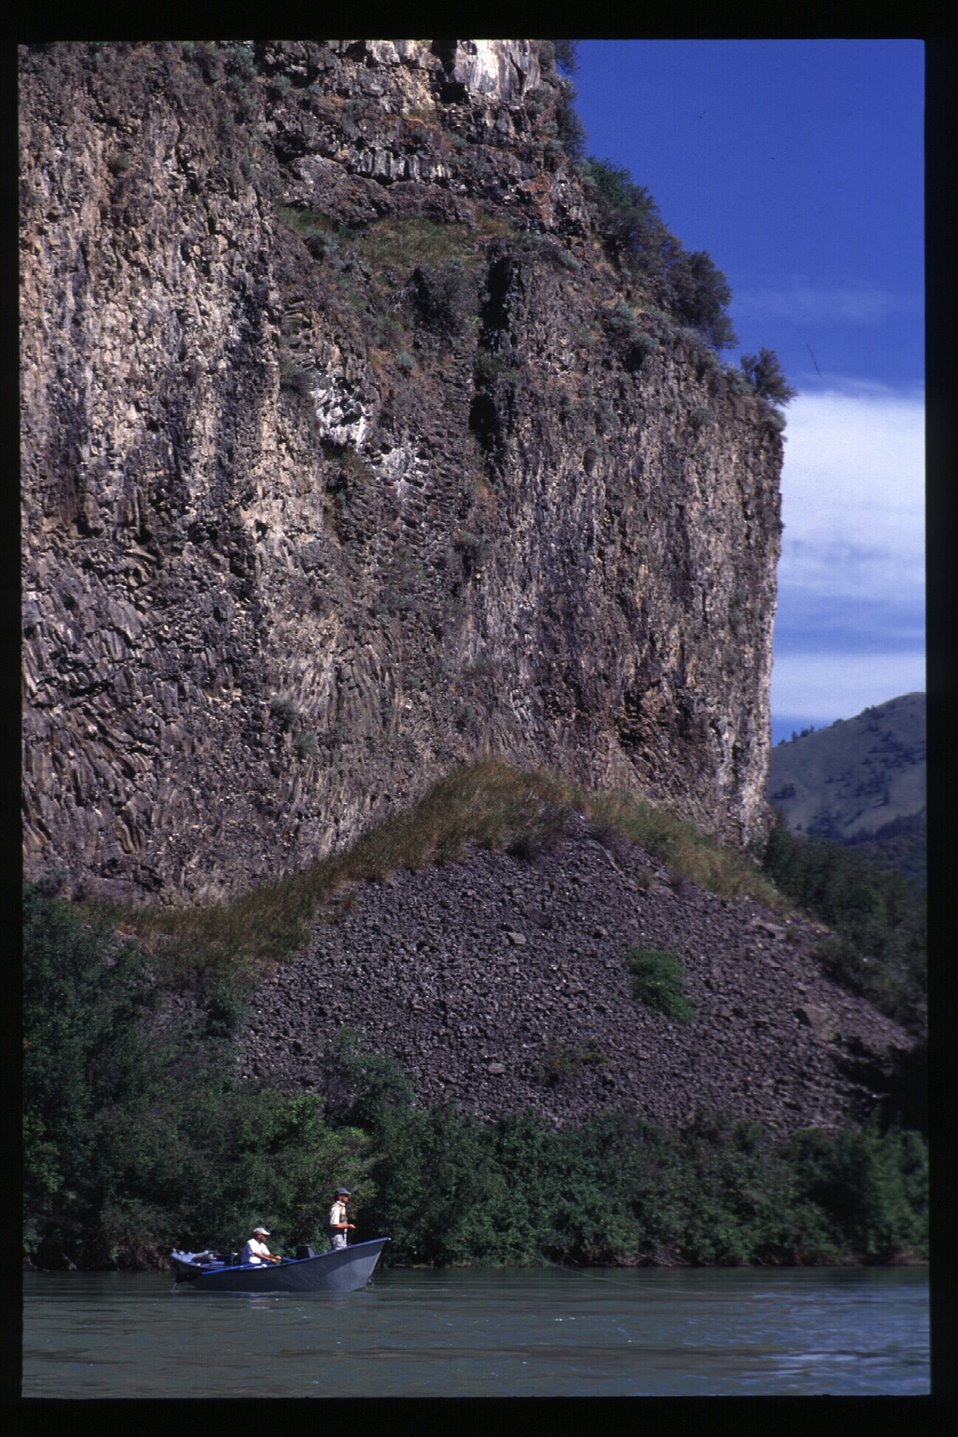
Boat fishing South Fork of Snake River Idaho Falls Field Office USRD Upper Snake River District